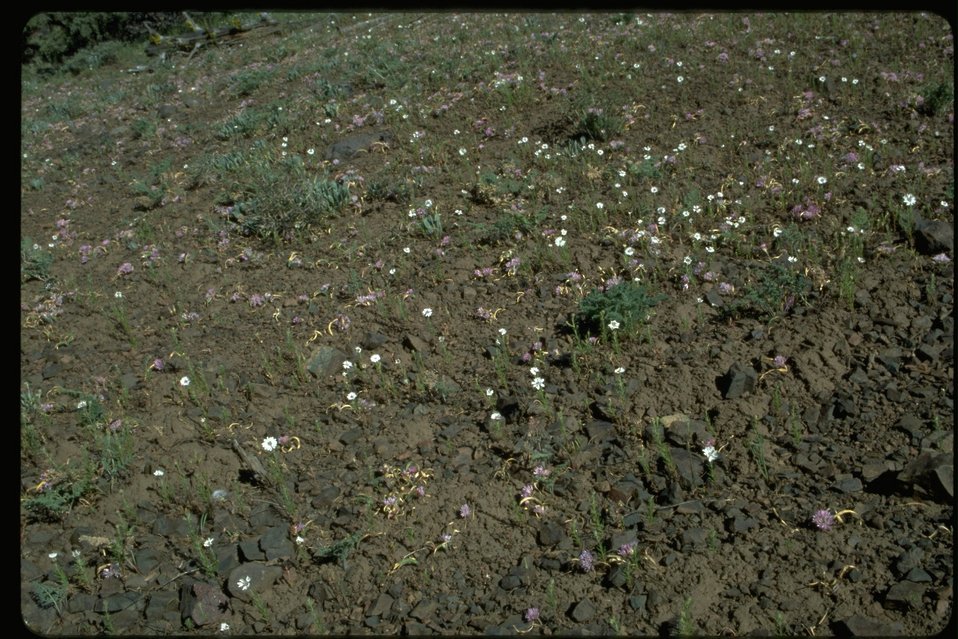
Long shot of wild onion habitat.